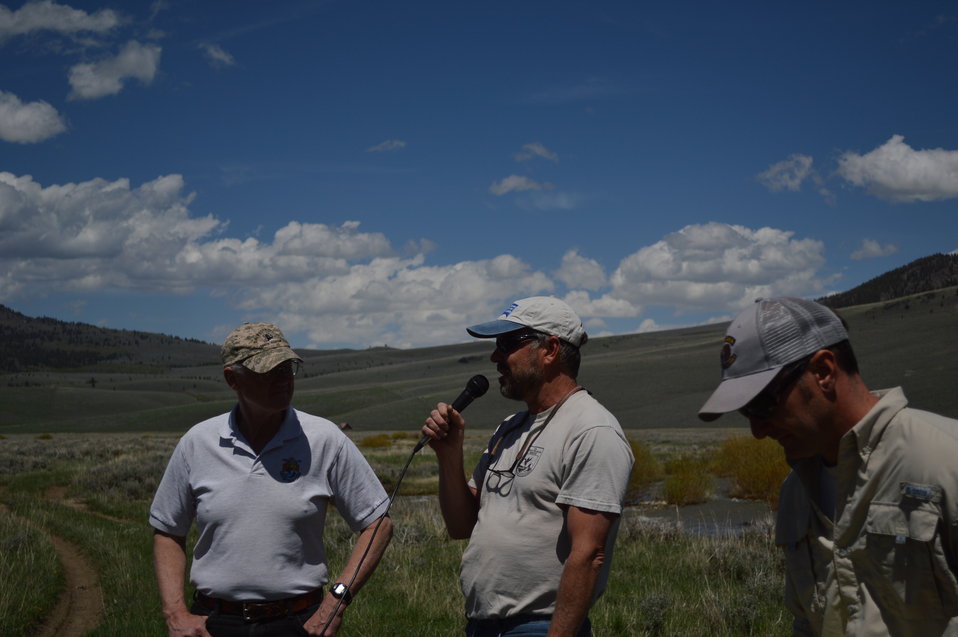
Regional Leadership Visit to Montana 2014